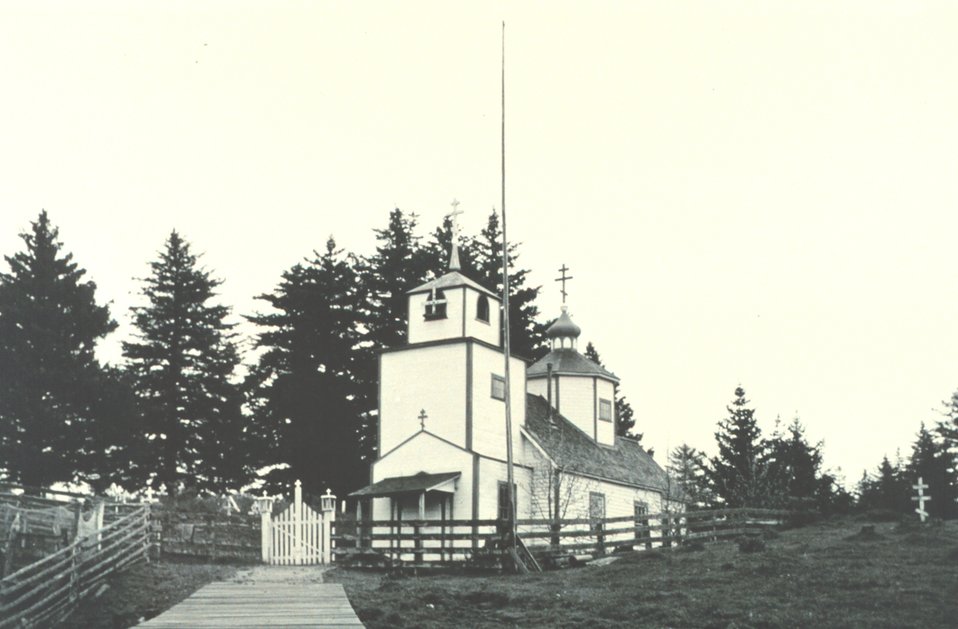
The Russian Orthodox Church at Uzinki. F&WS 10,048.